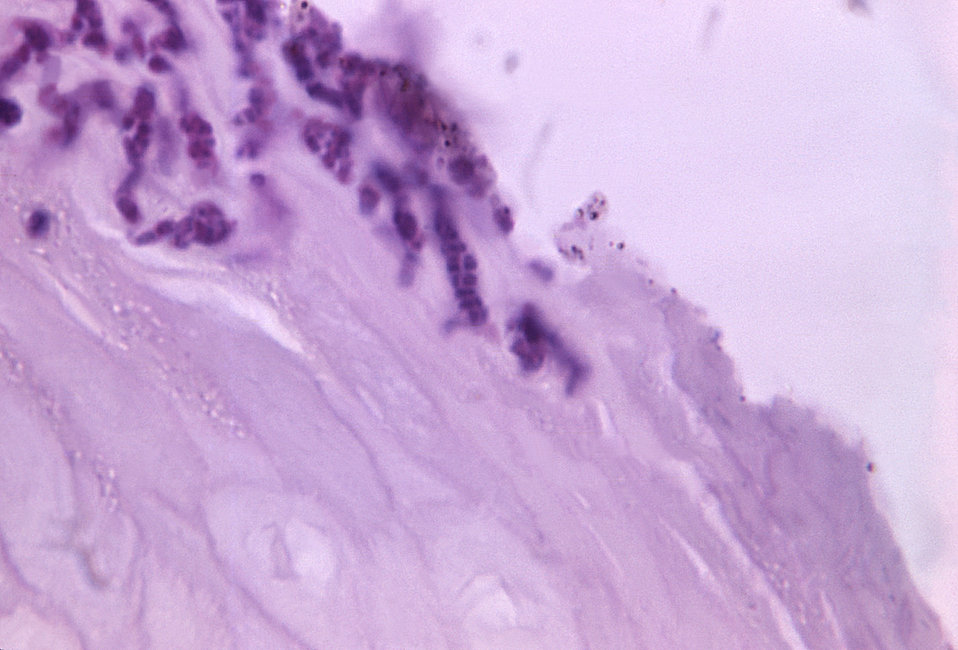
Using a PAS staining technique, and magnified 1187X, this photomicrograph of a skin sample from the sole of a patient's foot, revealed histopathologic signs indicative of Pitted Keratolysis due to a Gram-positive Dermatophilus sp. bacterial infection.